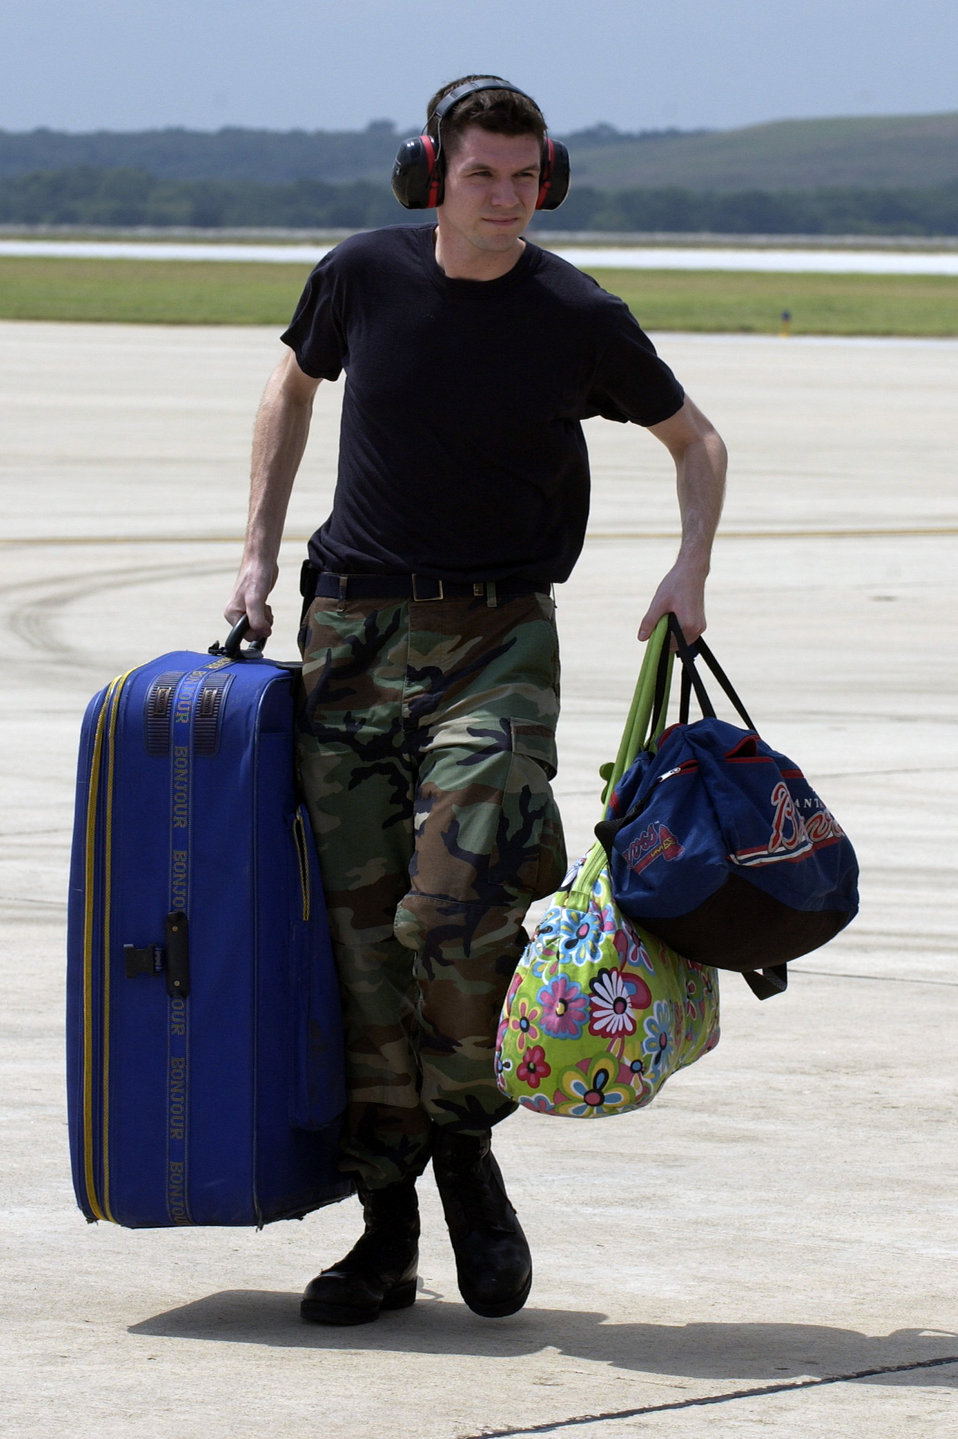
Price family glad to leave New Orleans

LACKLAND AIR FORCE BASE, Texas -- Senior Airman Eric Knug unloads luggage from a C-9 Nightingale aircraft that brought Hurricane Katrina evacuees here from New Orleans Sept. 3. Evacuees are being inprocessed and given a medical checkup, fed and put into temporary shelters. Airman Knug is assigned to the 37th Logistics Readiness Squadron.